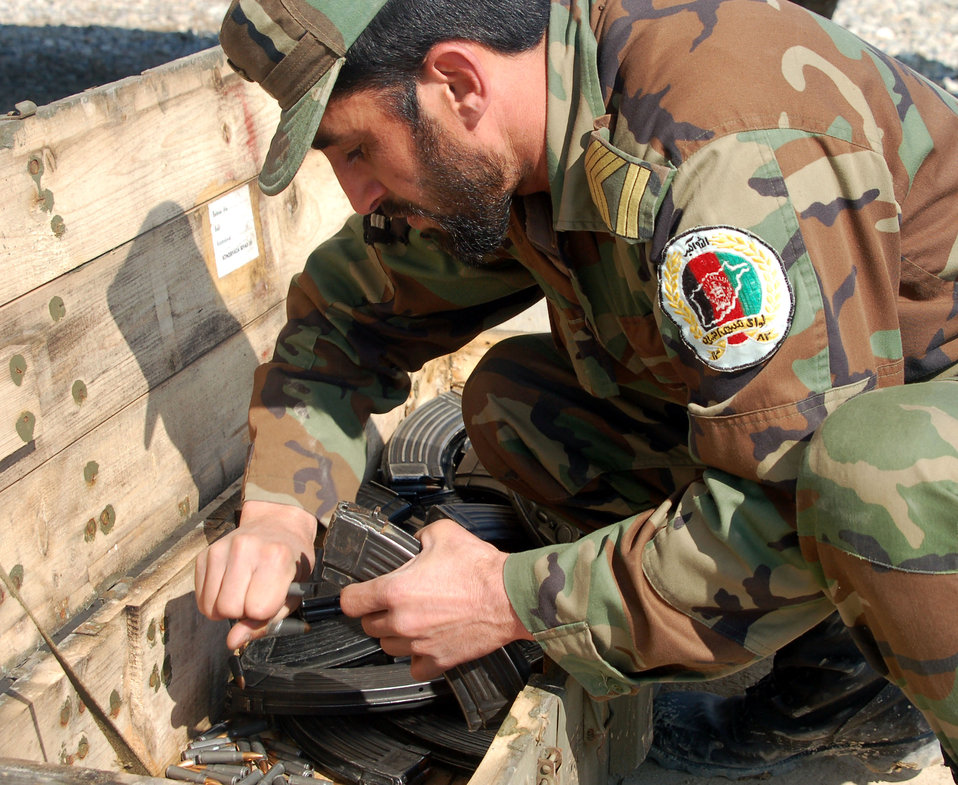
At home on the range

An Afghan National Army soldier removes the extra ammunition from AK-47 magazines after target practice is concluded. A battalion of ANA soldiers underwent long-rifle training March 14 at the Kabul Military Training Center.